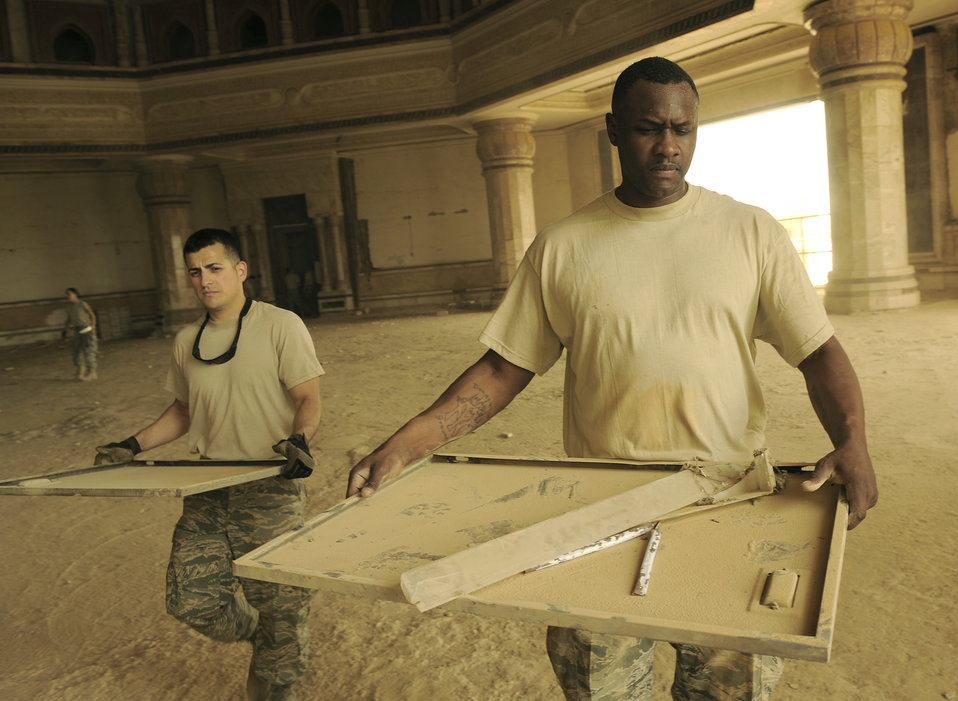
Airmen pick up pieces before historic handover

Staff Sgt. Justin Loterg and Tech. Sgt. Brian Jones remove office equipment and life support equipment from the Victory Over America Palace at Camp Slayer, Iraq, June 11, 2011. The two Airmen were among more than 35 volunteers who cleaned the palace before Iraqi officials reclaim the facility. Sergeant Loterg is an Air National Guardsmen deployed from Birmingham, Ala., and Sergeant Jones is deployed from Royal Air Force Lakenheath, England.